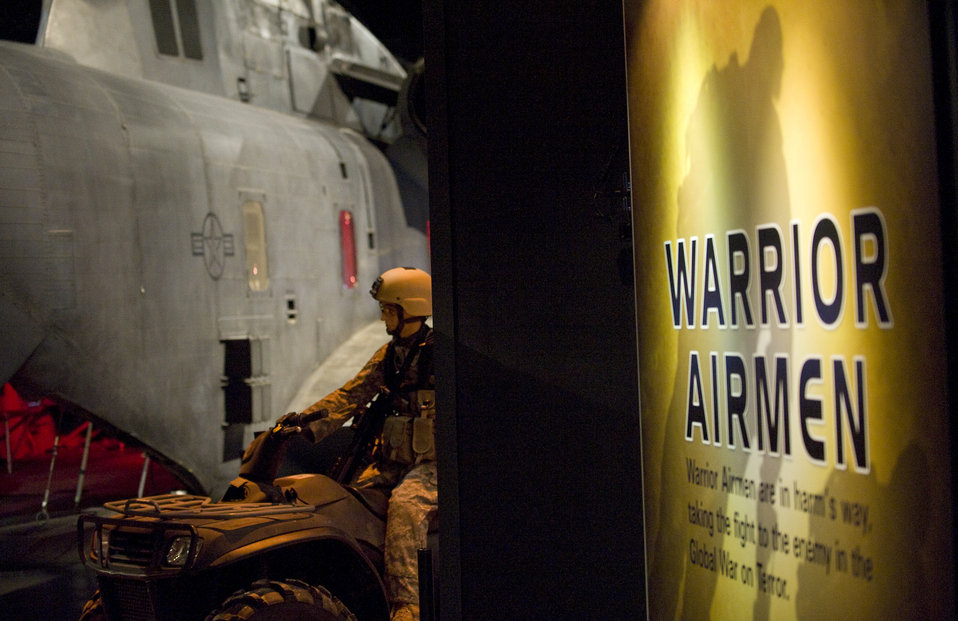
Museum opens exhibit dedicated to 'Warrior Airmen'

A MH-53 Pave Low helicopter along with special operations equipment and detailed mannequins showcase donated items of Airmen who served in the war on terrorism Jan. 12 at the Warrior Airmen Exhibit of the National Museum of the U.S. Air Force at Wright-Patterson Air Force Base, Ohio.